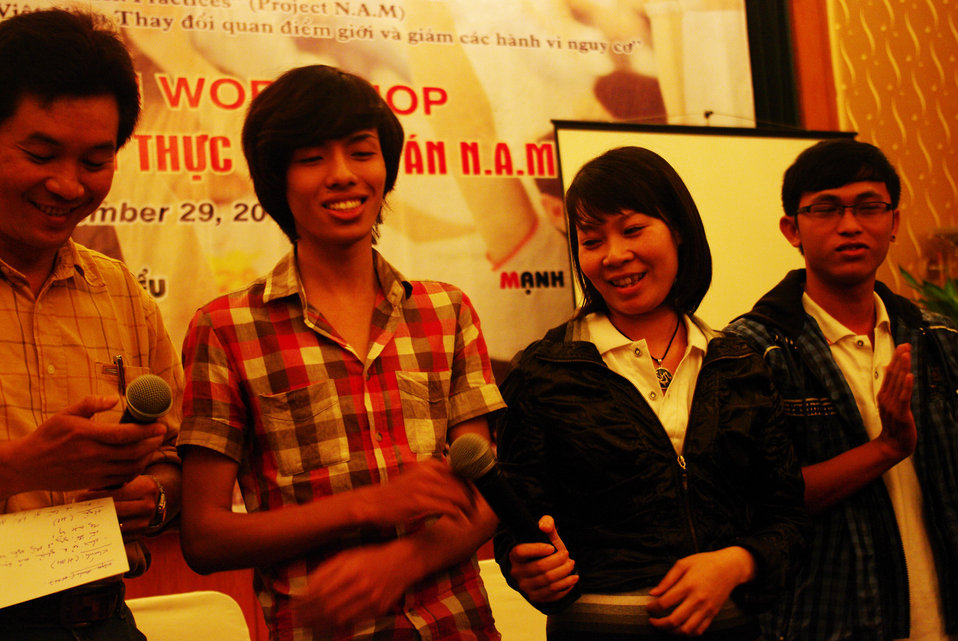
USAID Supports HIV Awareness among Street Youth and Young Men

Trainers and peer educators tell their stories on November 29, 2011, in Hanoi, Vietnam